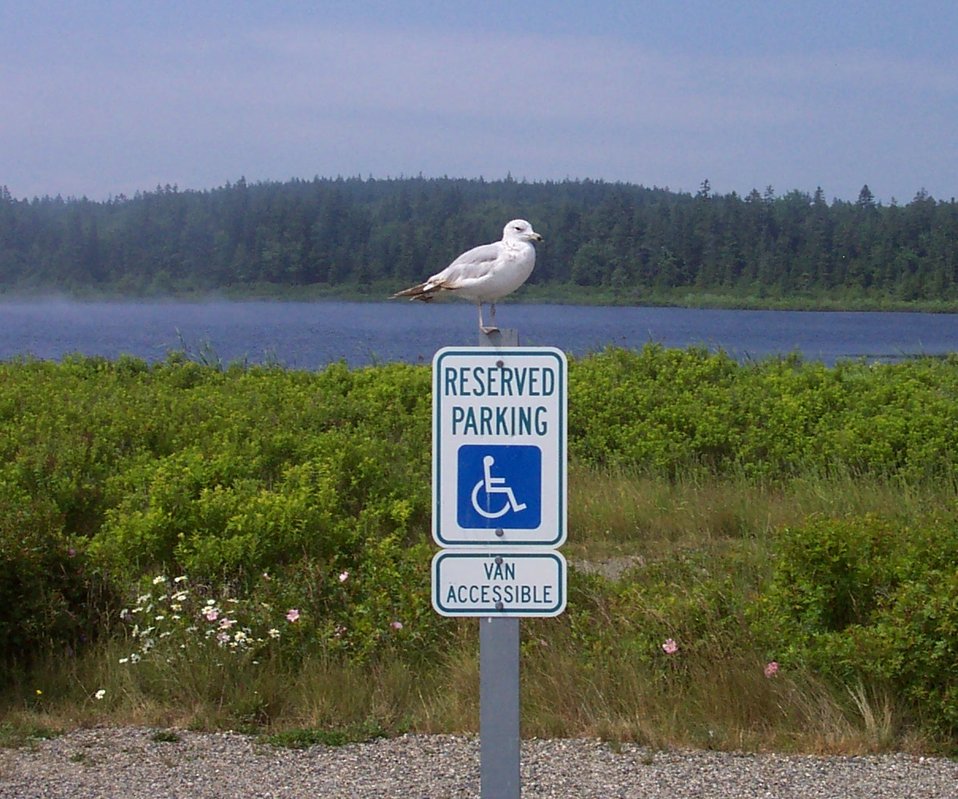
A sea-gull gives new meaning to reserved parking at Roque Bluffs State Park.